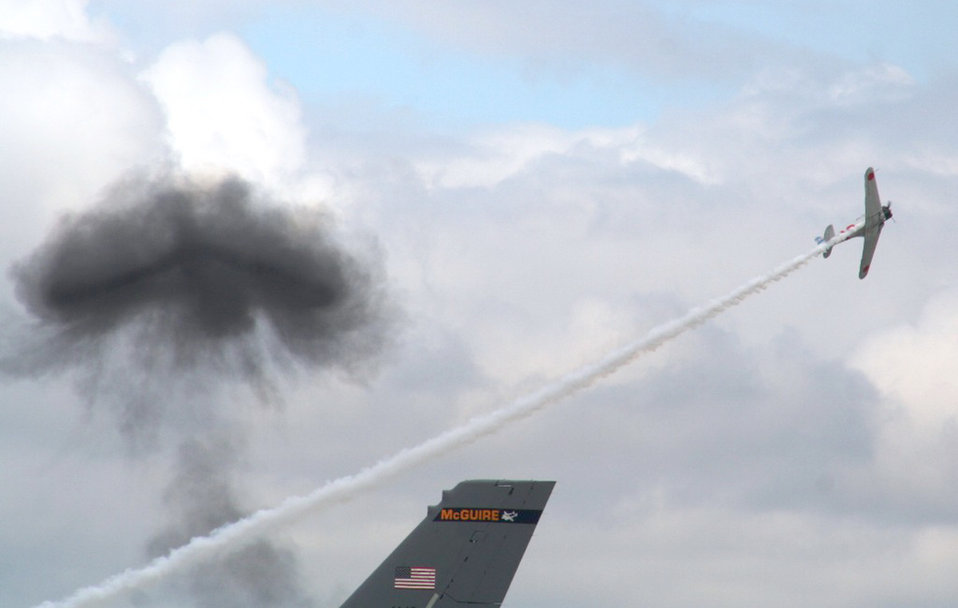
Scott AFB air show

A vintage World War II-era aircraft flies during the